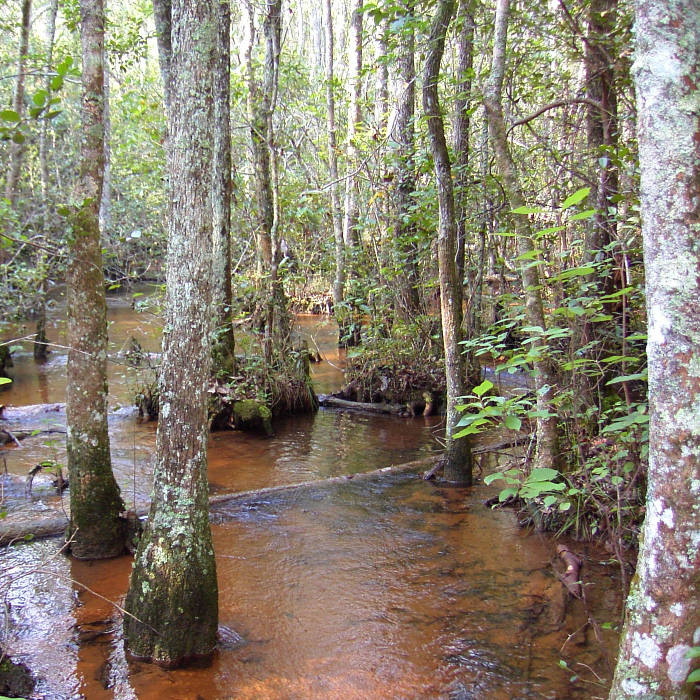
Coastal Plain stream, Georgia